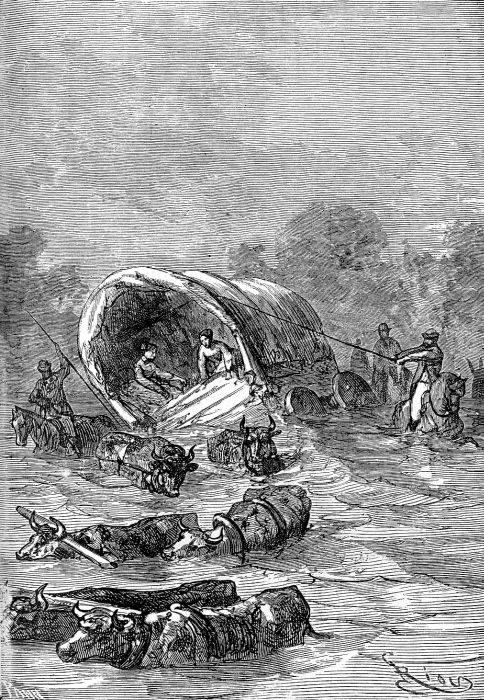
An ilustration from the novel 'In Search of the Castaways; or Captain Grant's Children' by Jules Verne drawn by Édouard Riou. Polski: Ilustracja powieści Juliusza Verne'a 'Dzieci kapitana Granta' autorstwa Édouarda Riou. Français : 'Les Enfants du capitaine Grant', Édouard Riou. Français : Le chariot s’inclina sous un angle inquiétant.